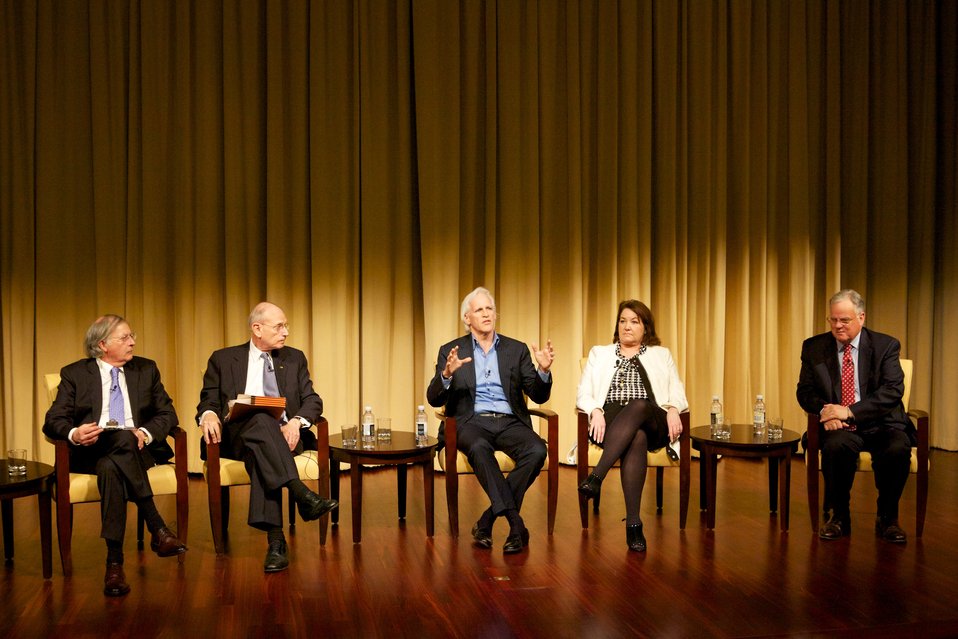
The Monuments Men; Greg Bradsher (left), archivist, moderates the discussion of Nazi looting and the Monuments, Fine Arts, and Archives section with panelists: Ambassador Stuart E. Eizenstat (2nd from left), former Special Representative of the President and Secretary of State on Holocaust-Era Issues, Robert M. Edsel (center), author, Nancy H. Yeide (2nd from right), Head of the Department of Curatorial Records at the National Gallery of Art, and Michael J. Kurtz (right), former Assistant Archivist for Records Services